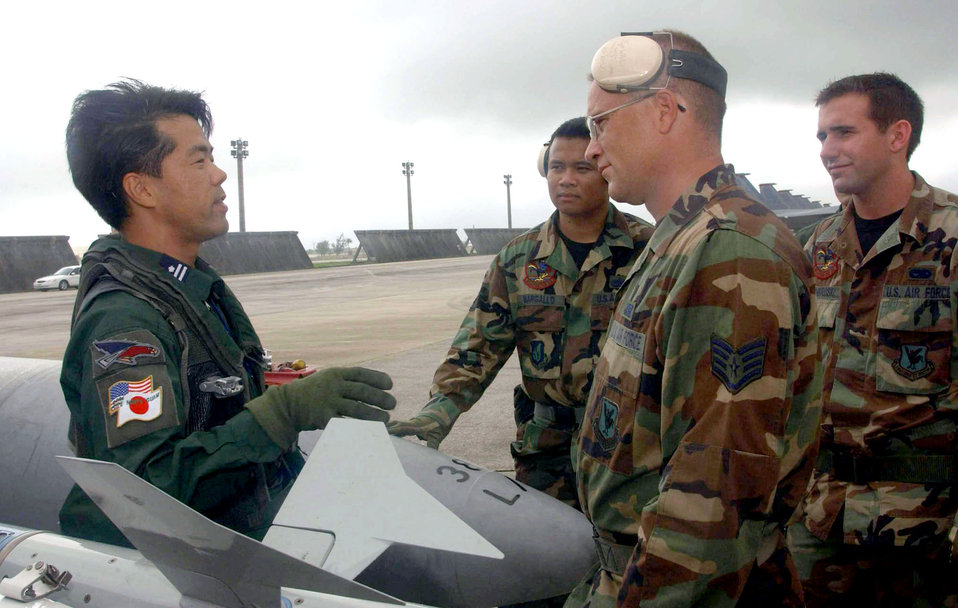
Exercise Cope North

ANDERSEN AIR FORCE BASE, Guam -- Japanese Maj. Hideaki Yoshizawa explains the features of his aircraft to Staff Sgts. Martin Waack (foreground), Lucilio Margallo (left) and Senior Airman Joseph Dombroski during exercise Cope North. Waack, Margallo and Dombroski are crew chiefs from the 67th Aircraft Maintenance Unit at Kadena Air Base, Japan. Hideaki is an F-4 fighter pilot from the 83rd Wing at Naha Air Base, Japan.